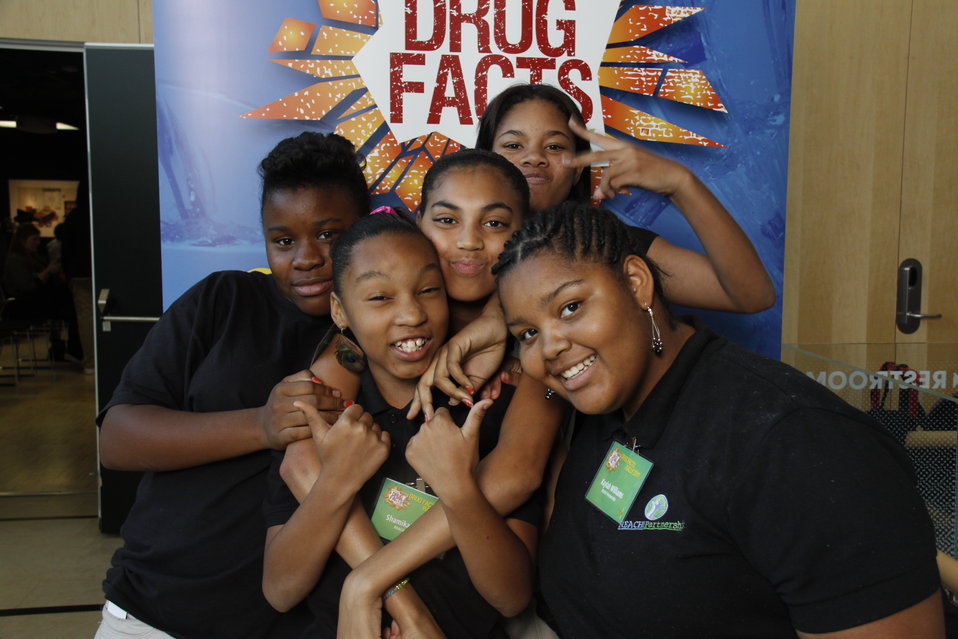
NDFW Mentor Event